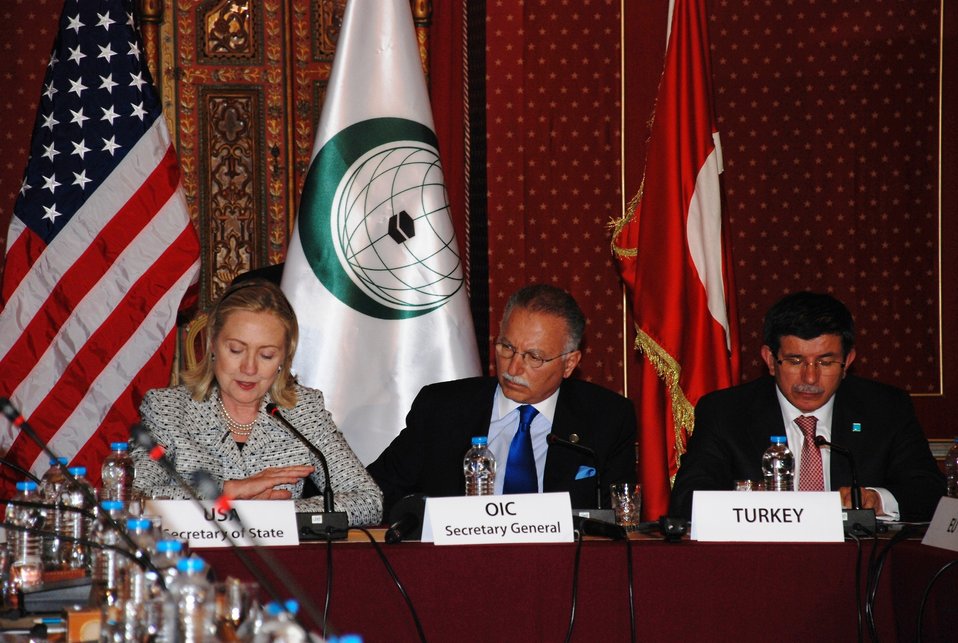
Secretary Clinton Participates in the Organization of Islamic Cooperation (OIC) Conference

U.S. Secretary of State Hillary Rodham Clinton participates in the Organization of Islamic Cooperation (OIC) Conference on “Building on the Consensus” at the Research Center for Islamic History, Art and Culture (IRCICA) in Istanbul, Turkey, on July 15, 2011.